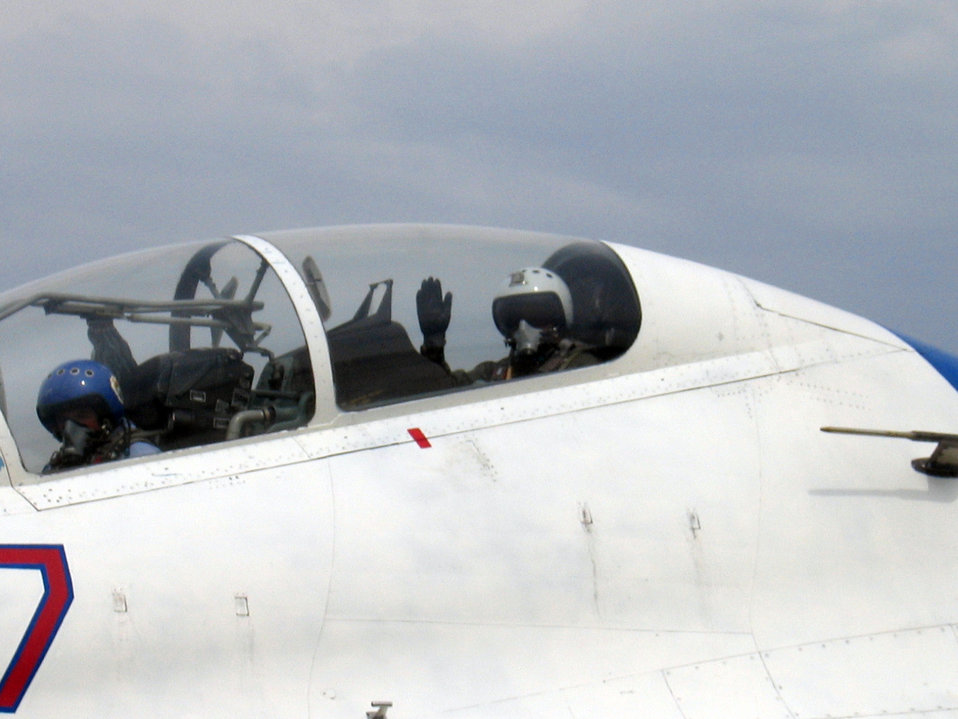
COMUSAFE boosts U.S.-Russian relations with visit

Gen. Tom Hobbins, U.S. Air Forces in Europe commander, waves from the backseat of a Russian SU-27 Flanker piloted by Gen. Maj. Aleksandr Kharchevskiy, chief of the 4th Center for Combat Use and Flight Training, on Aug. 15. General Hobbins, who is in Russia Aug. 14 to 17 to bolster relationships and security cooperation between U.S. and Russian air forces, also flew in a MiG-29 Fulcrum during his visit to Lipetsk Air Base.